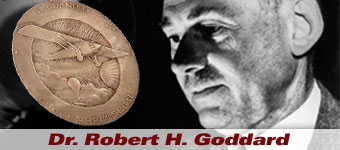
Dr. Robert Goddard history spotlight graphic .